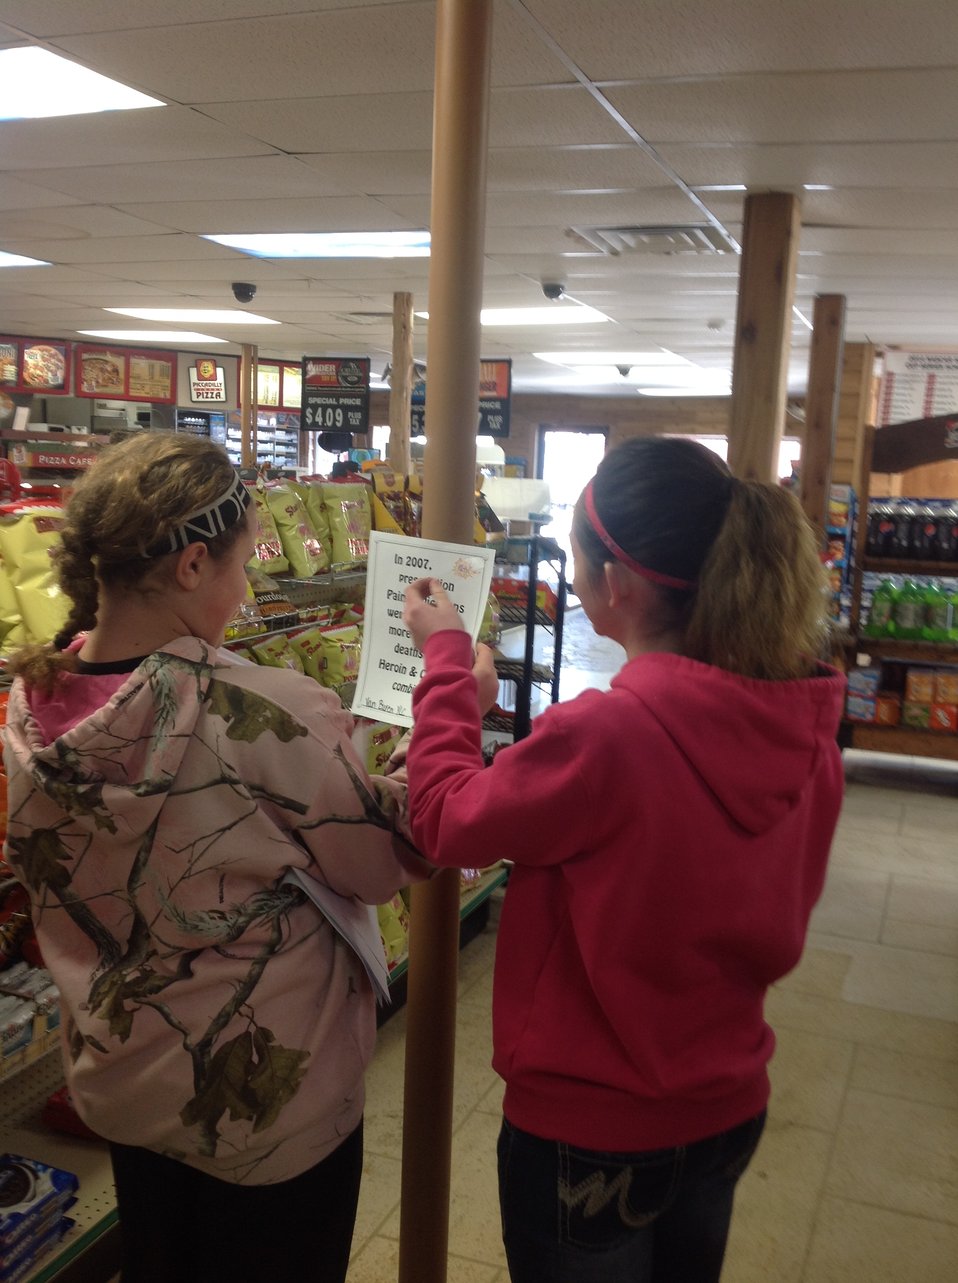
YLC: Getting the Word Out

Teenagers from the Van Buren County SAFE Coalition's, Youth Leadership Council (YLC) in Keosauqua, Iowa participate in various events during National Drug Facts Week, 2014.